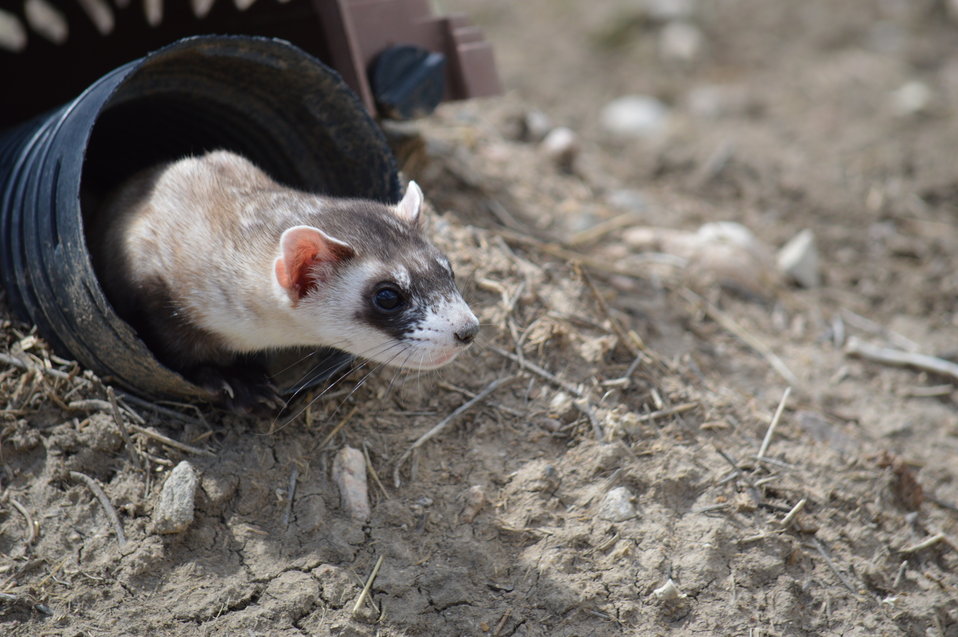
Interns visit the NBFFCC

In the summer of 2012, USFWS Region 6 interns visited the National Black-footed Ferret Conservation Center (NBFFCC) in Colorado to learn how the program reintroduces the endangered Black-footed ferret back into its native habitat.